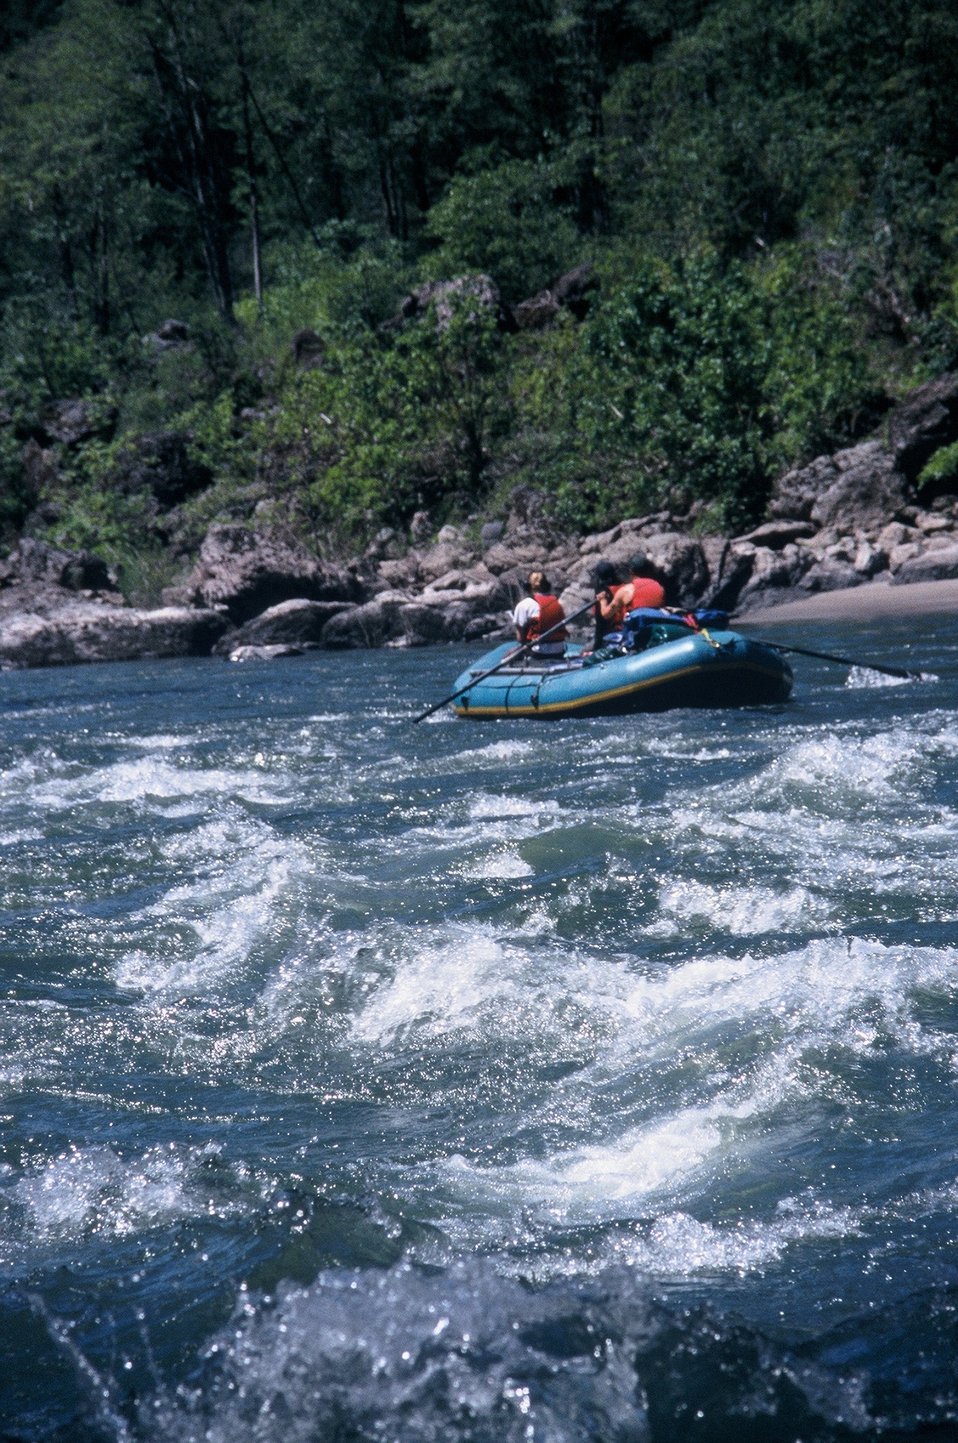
Wild section of the Rogue River from Grave Creek to Foster Bar May 19 to May 22.